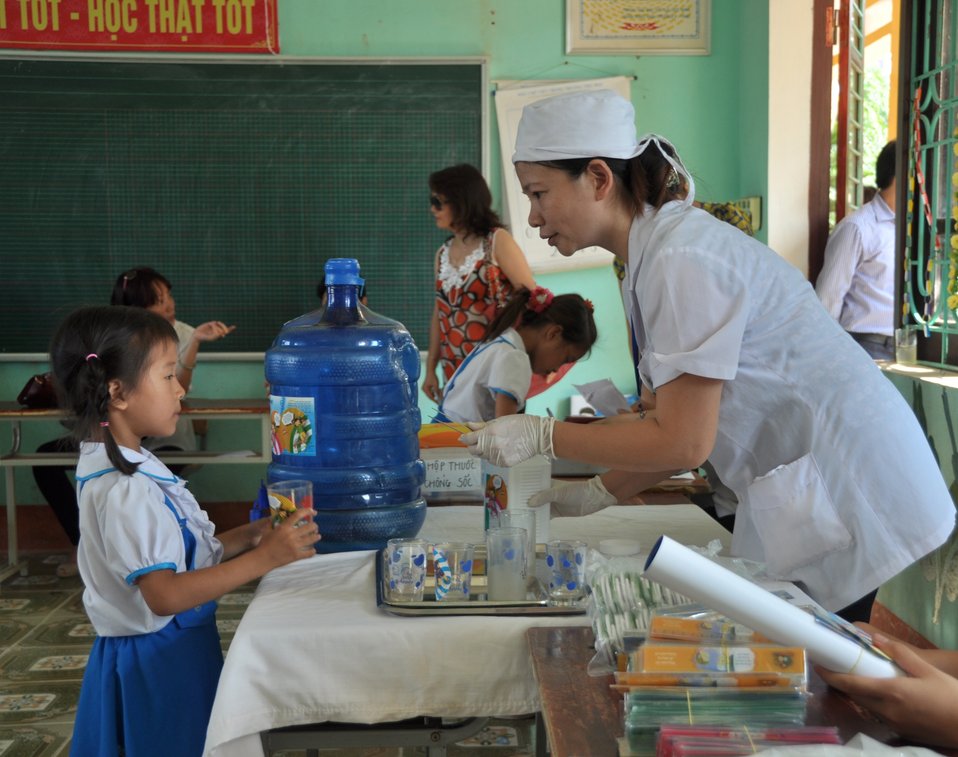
USAID supports deworming education and medication distribution in Bac Giang Province

May 20, 2013